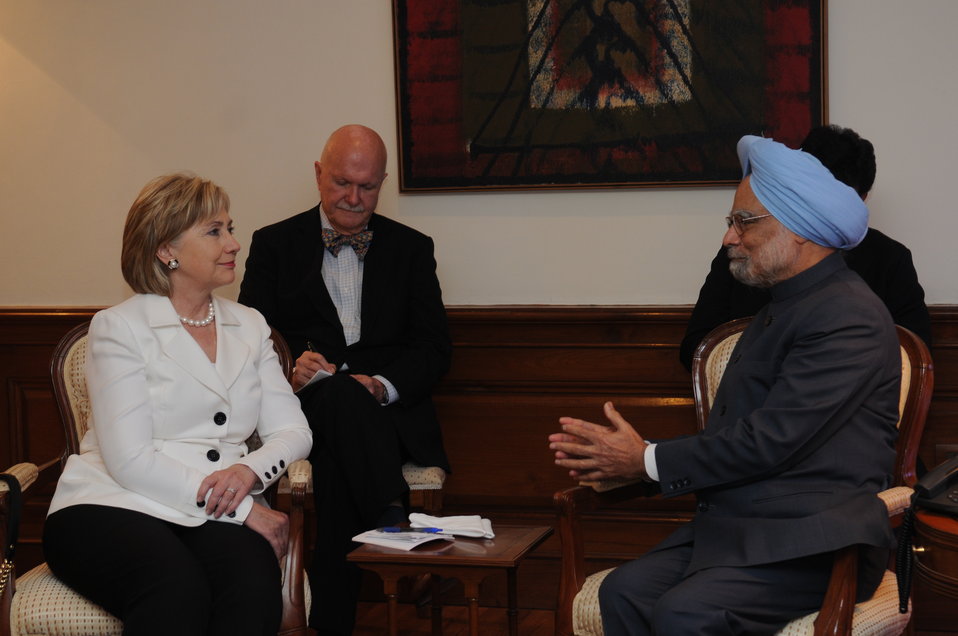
Secretary Clinton Visits Indian Prime Minister

U.S. Secretary of State Hillary Rodham Clinton discusses Indo-U.S. relations with Prime Minister Manmohan Singh at his residence in New Delhi, India July 19, 2009. Charge d'Affaires Peter Burleigh is seated next to Secretary Clinton.